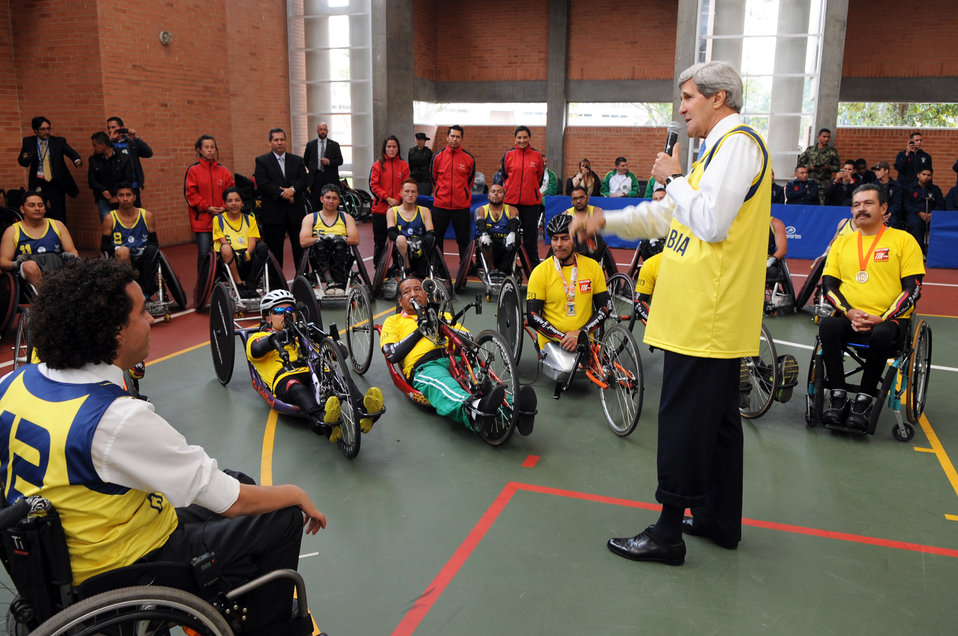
Secretary Kerry Addresses Wounded Veteran Cyclists

U.S. Secretary of State John Kerry addresses a group of disabled law enforcement and military veterans who are now cyclists during a visit to the Coldeportes Center in Bogota, Colombia, on August 12, 2013.